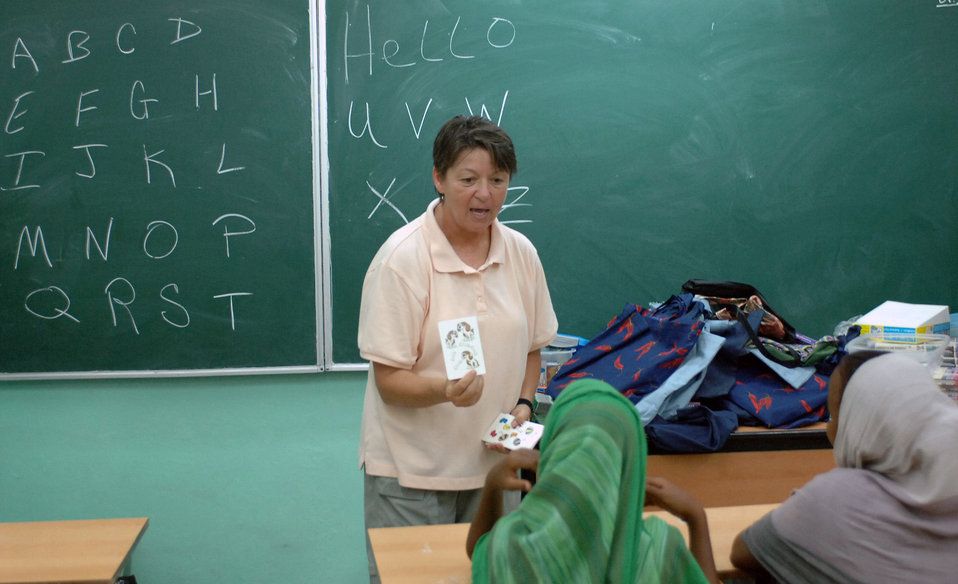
U.S. military women reach out to Djiboutian women

Chief Master Sgt. Jessica Palmer holds up a flash card of a dog and asks the students to repeat the word and then spell it on paper Aug. 15 in Djibouti City, Djibouti. The English Discussion Group at the girls' orphanage allows U.S. military women to teach Djiboutian women how to count, spell and improve their conversational English. Chief Palmer is assigned to the 449th Air Expeditionary Group.